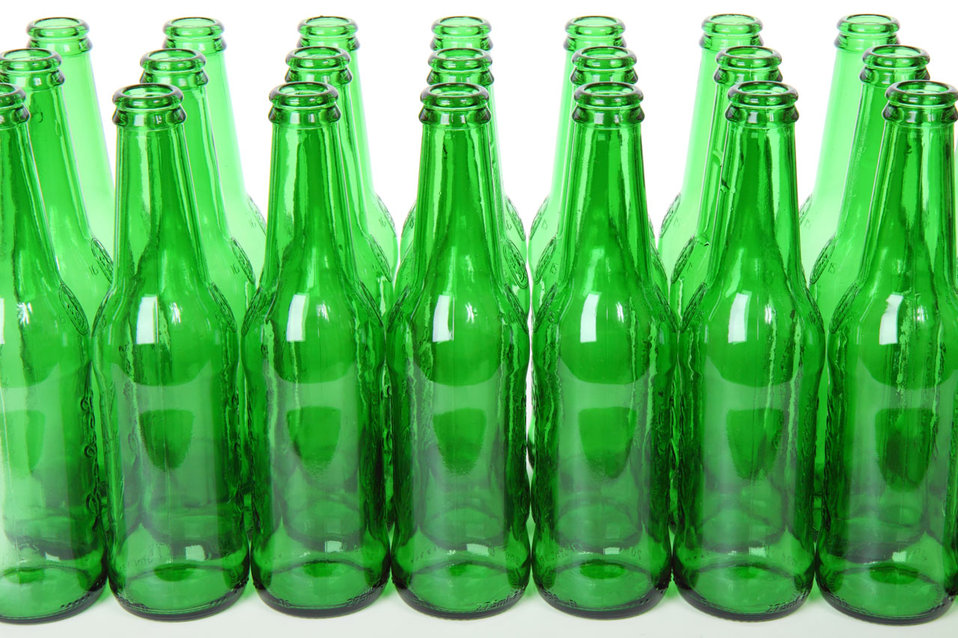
Green bottles

Green beer bottles in rows.